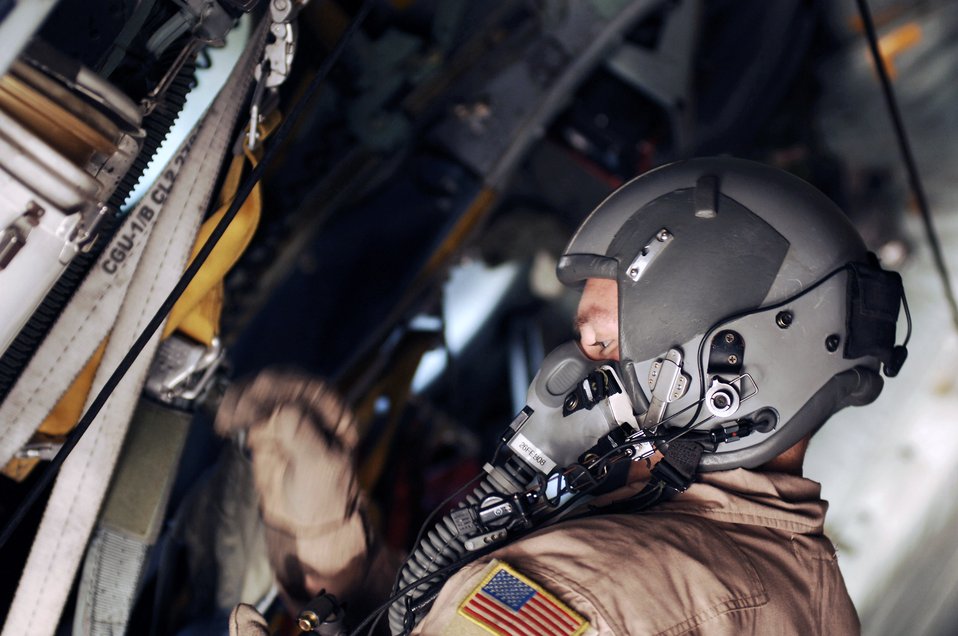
Everything checks

Senior Airman Kenny Harmon performs a pre-flight oxygen mask inspection Feb. 4 on board a C-130 Hercules prior to a mission. Airman Harmon is a C-130 loadmaster deployed with the 737th Expeditionary Airlift Squadron.